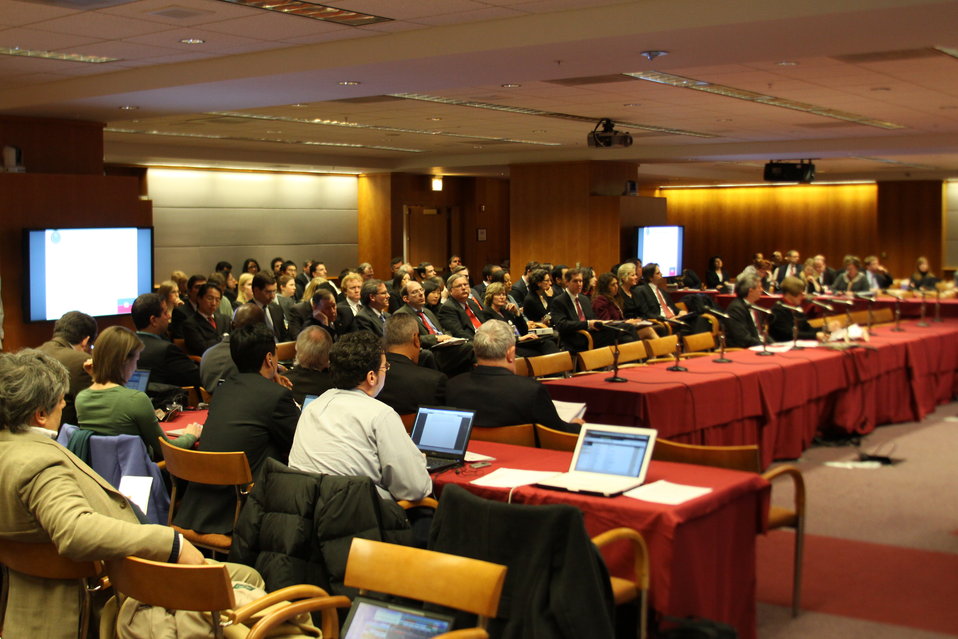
Open Commission Meeting - 2/18/2010

The Federal Communications Commission will hold an Open Meeting in Washington, DC. on February 18, 2010, which will include the following items:

E-Rate: An Order and Notice of Proposed Rulemaking to enable schools that receive funding from the E-Rate program to allow members of the general public to use the schools' Internet access during non-operating hours at no additional cost to the Universal Service Fund. This order and notice do not permit or require any changes to E-Rate applications due on February 11, 2010; Ex Parte Reform: A Notice of Proposed Rulemaking to improve the transparency and effectiveness of the FCC's decision-making process by reforming the ex parte rules; Procedural Reform: A Notice of Proposed Rulemaking to enhance the efficiency, openness, and transparency of the Commission's proceedings by improving and modernizing certain organizational and procedural rules; National Broadband Plan Status Report: Commission staff will report on the status of the National Broadband Plan, providing a framework for the national purposes portion of the Plan.